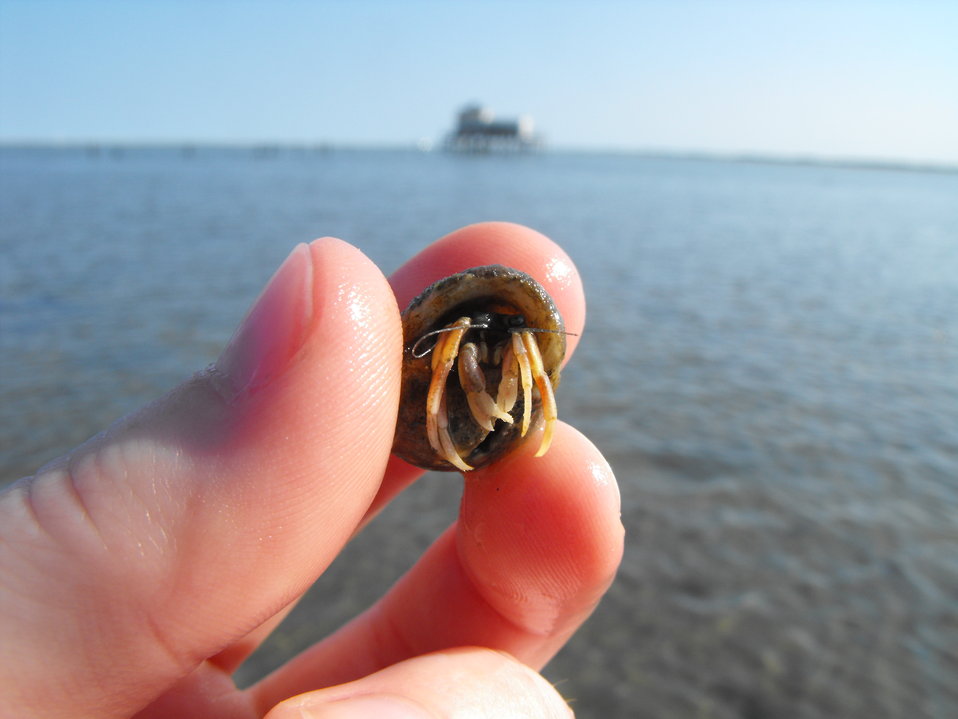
Hermit crab

A hermit crab from the saltmarsh off the Woodland Trail at Chincoteague National Wildlife Refuge.